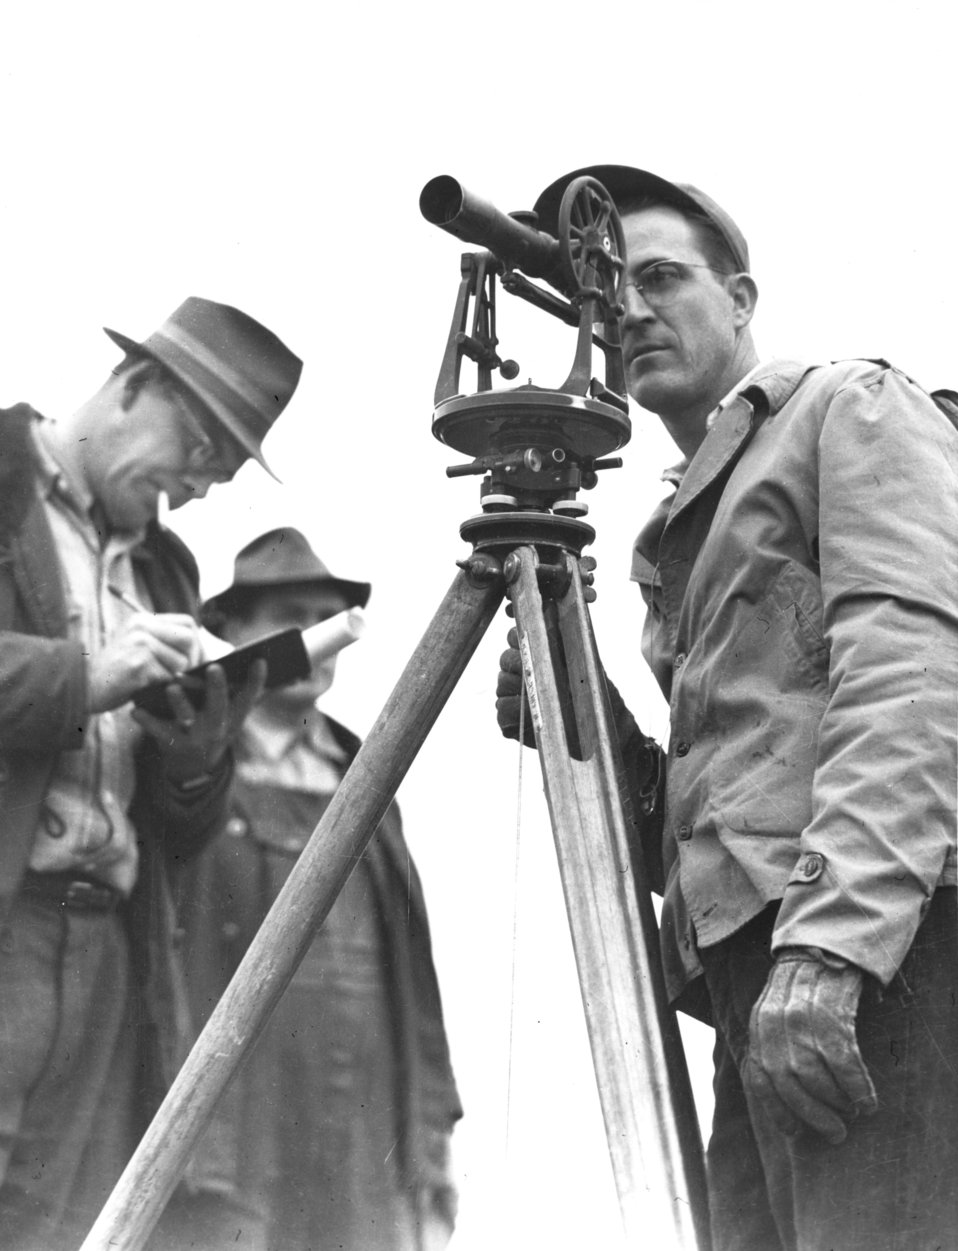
Construction activity at Oak Ridge